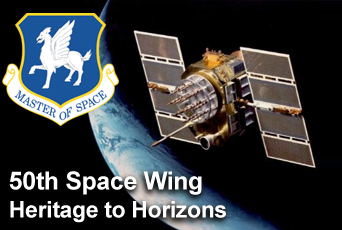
50th Space Wing

The latest Heritage to Horizons series presentation highlights the 50th Space Wing whose heritage first called for mastery of the skies and has grown to master of space.